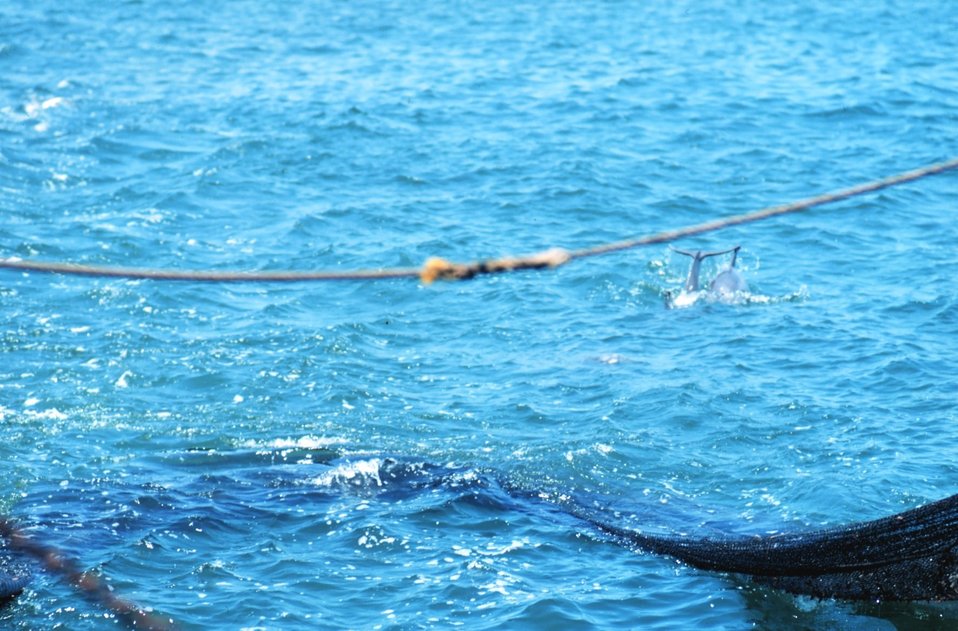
Net in the water during trawling operations